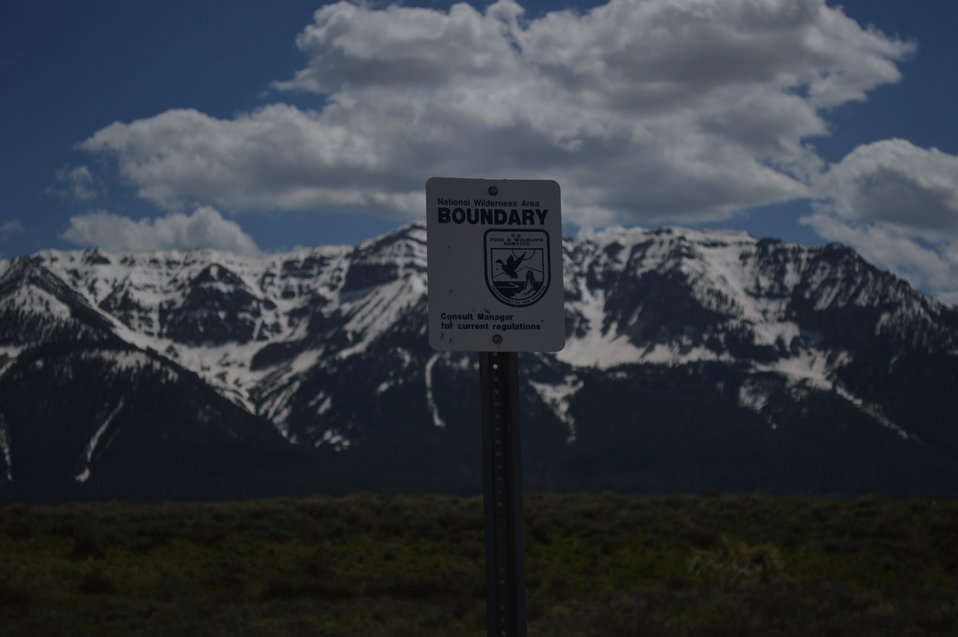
Regional Leadership Visit to Montana 2014